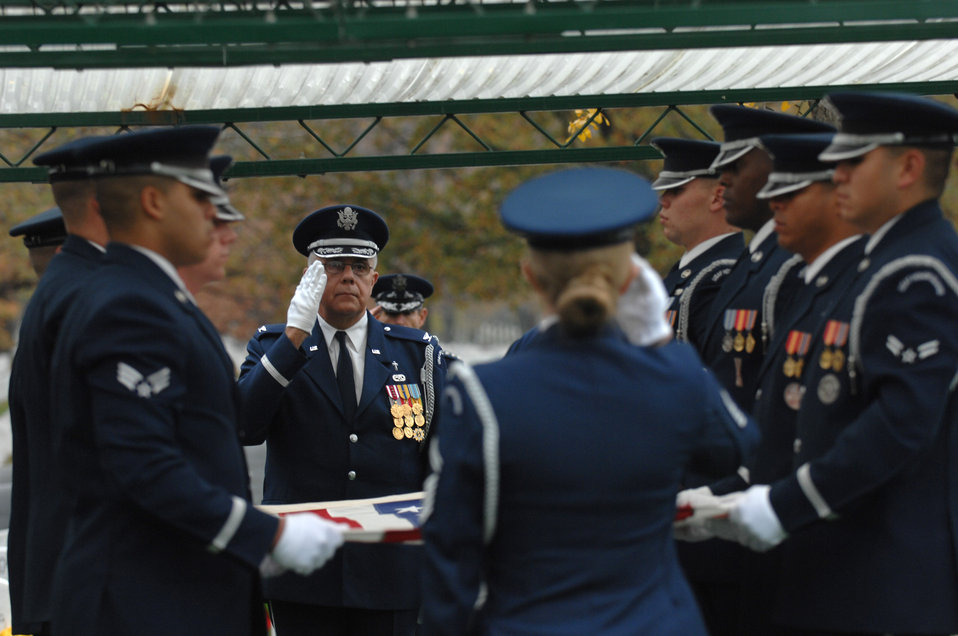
Remains of B-52 aircrew laid to rest at Arlington

Chaplain (Col.) Charlie Stutts renders a salute prior to the flag folding at a group burial ceremony Nov. 14 at Arlington National Cemetery in Virginia. The group burial ceremony was held for six crewmembers that perished in a July 21 B-52 Stratofortress crash off Guam's Northwest coast.